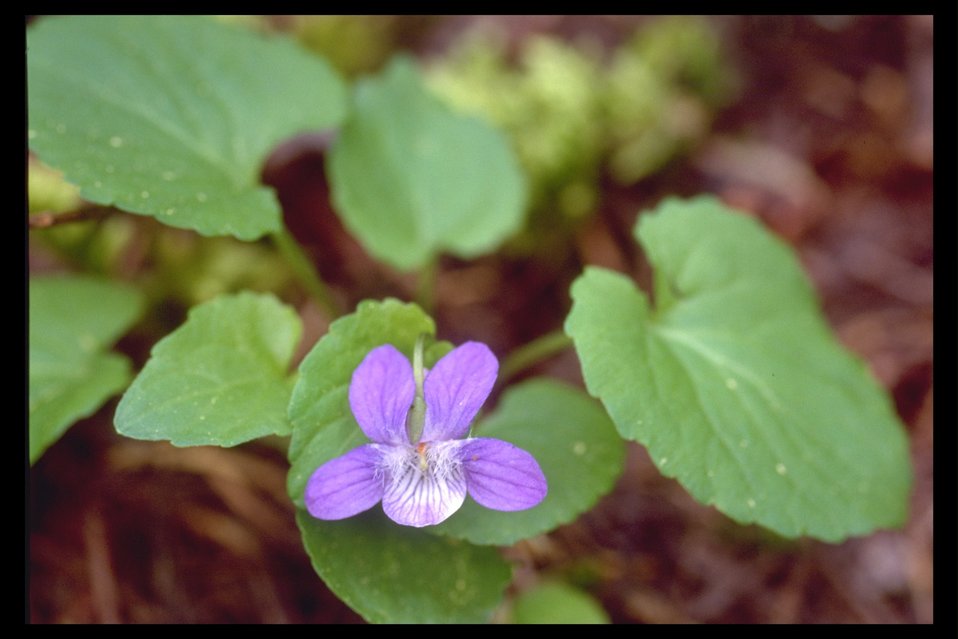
Western Dog Violet, Early Blue Violet (Viola adunca) found near Twincheria Creek east of Butte Falls.